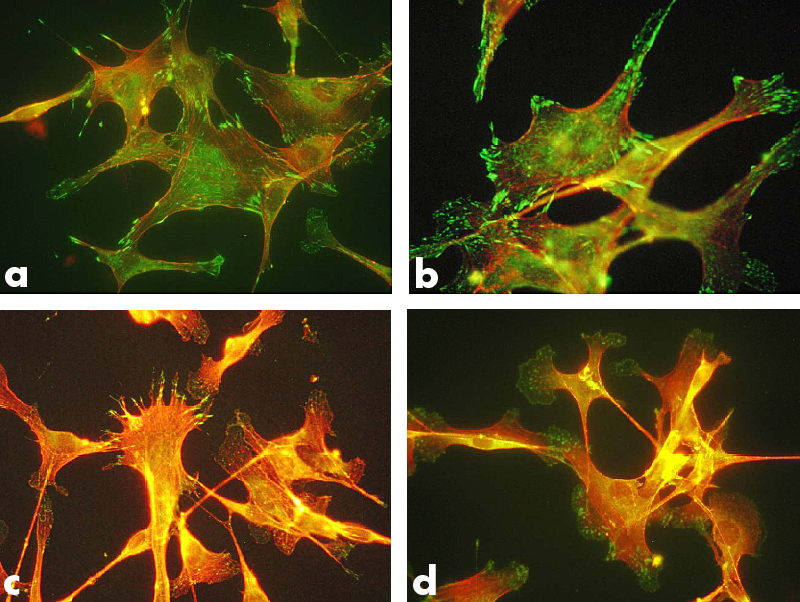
Biomaterial Blends

Series of microscopic images shows the influence of biomaterial blends on cell shape and adhesion properties. Images show the changes in actin (red), a structural protein related to cell shape, and vinculin (green), a protein used in cell adhesion for pure and blended samples of poly(DTE carbonate) and poly(DTO carbonate). (a) Pure DTE, (b) 50/50 DTE/DTO, (c) 30/70 DTE/DTO, (d) Pure DTO